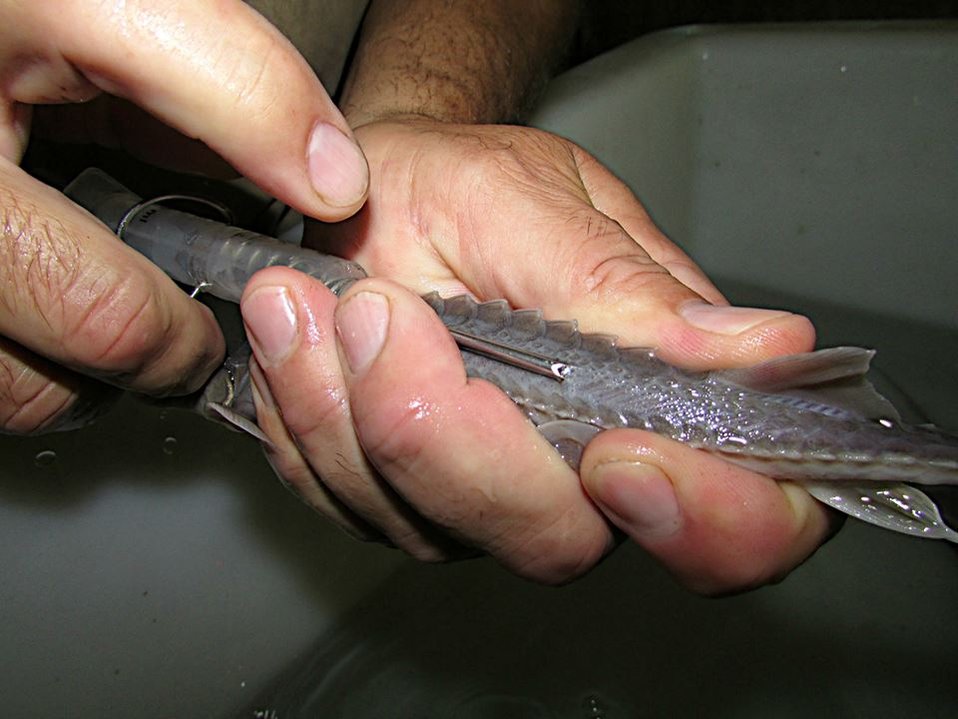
PIT Tagging

In early September we released 82 endangered pallid sturgeon into Lewis and Clark Lake. They were stocked at three different locations from Springfield, SD to Lynch, NE. These sturgeon were born at Garrison Dam National Fish Hatchery and raised at Gavins Point National Fish Hatchery. They are about a year old.

Before they were released, we gave them their PIT (Passive Integrated Transponder) tags. These are 10 digit microchips that allow us to identify the fish's age, gender and family history.